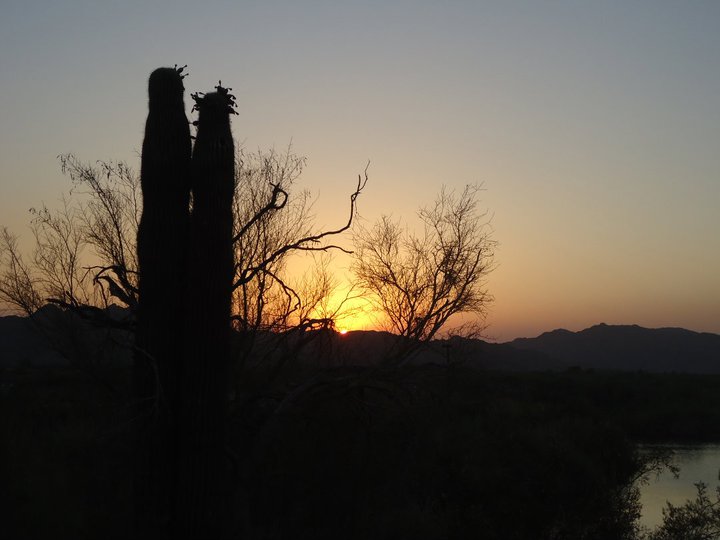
sunset at Imperial National Wildlife Refuge, AZ

Photo: Molly McCarter, USFWS
2011 Wilderness Fellow